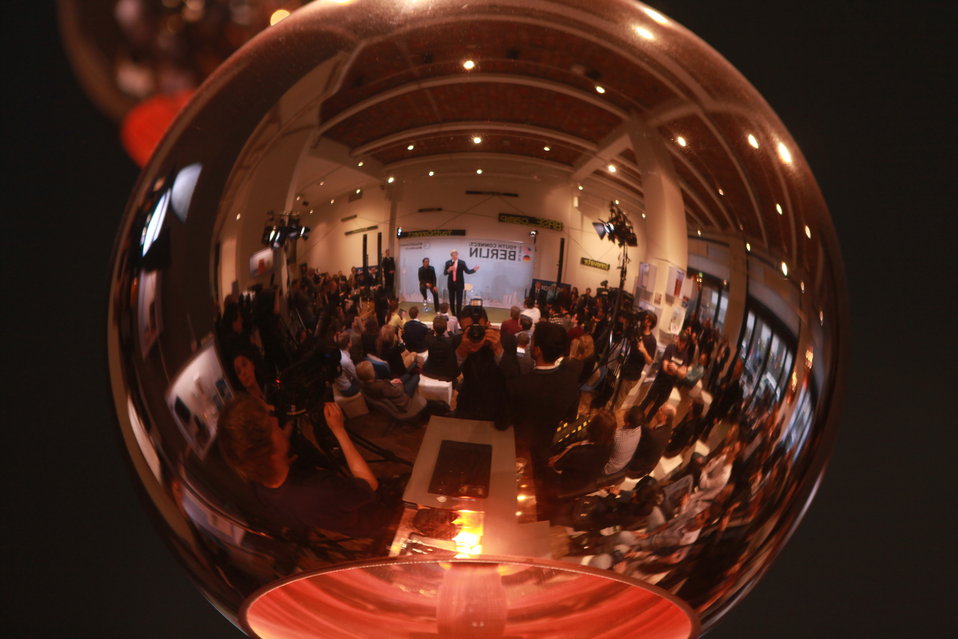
Secretary Kerry Engages Young German Innovators and Leaders in Berlin

U.S. Secretary of State John Kerry engages young German innovators and leaders at his first Youth Connect event with moderator/journalist Cherno Jobatey in Berlin, Germany, February 26, 2013.